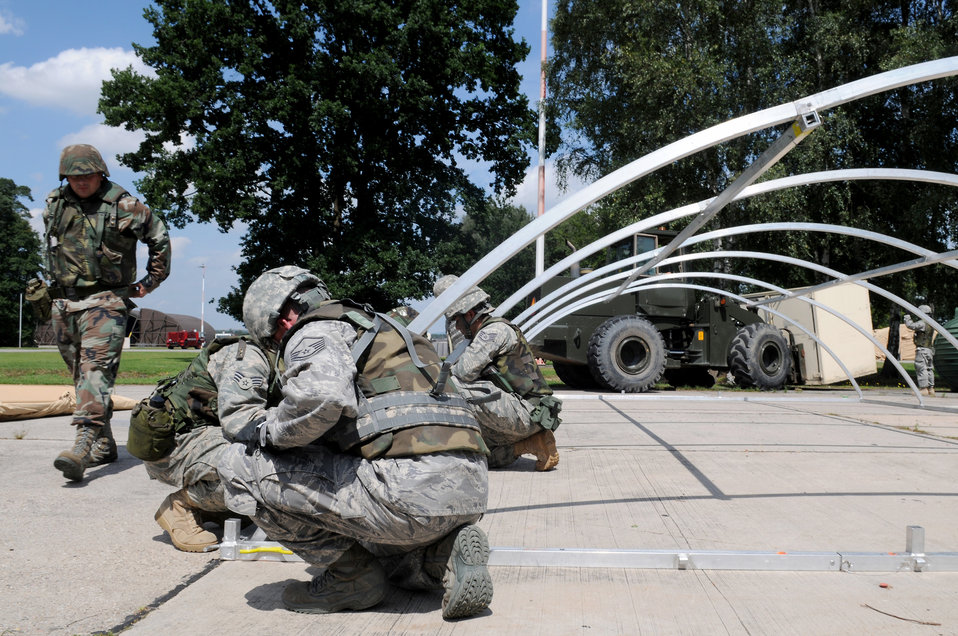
Ramstein squadron

Airmen work together to build small shelter-system tents during a Silver Flag exercise at the 435th Construction and Training Squadron contingency training site at Ramstein Air Base, Germany. The 435th CTS celebrates its 60th anniversary Sept. 10, 2010, at Ramstein Air Base, Germany.